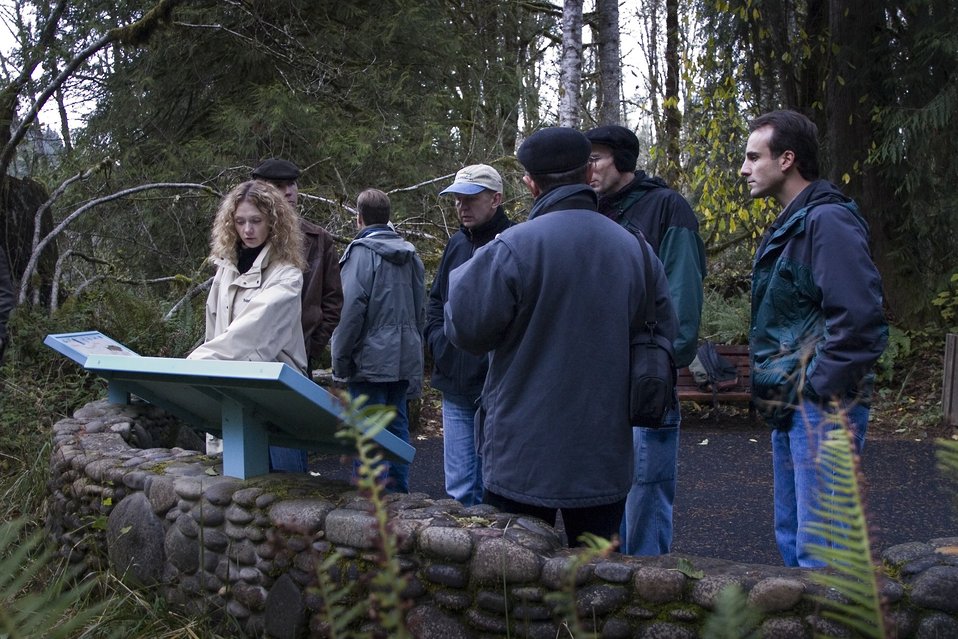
Forest Service's Dan Shively looks on as a Russian translator reads the Salmon Interpretive signs to Oksana Rudenko, Kamchatka Regional Administrator, Alexander Chistyakov, Vice-Governor of Kamchatka, and Vyacheslav Zvyagintsev Wild Salmon Center Kamchatka Representative.